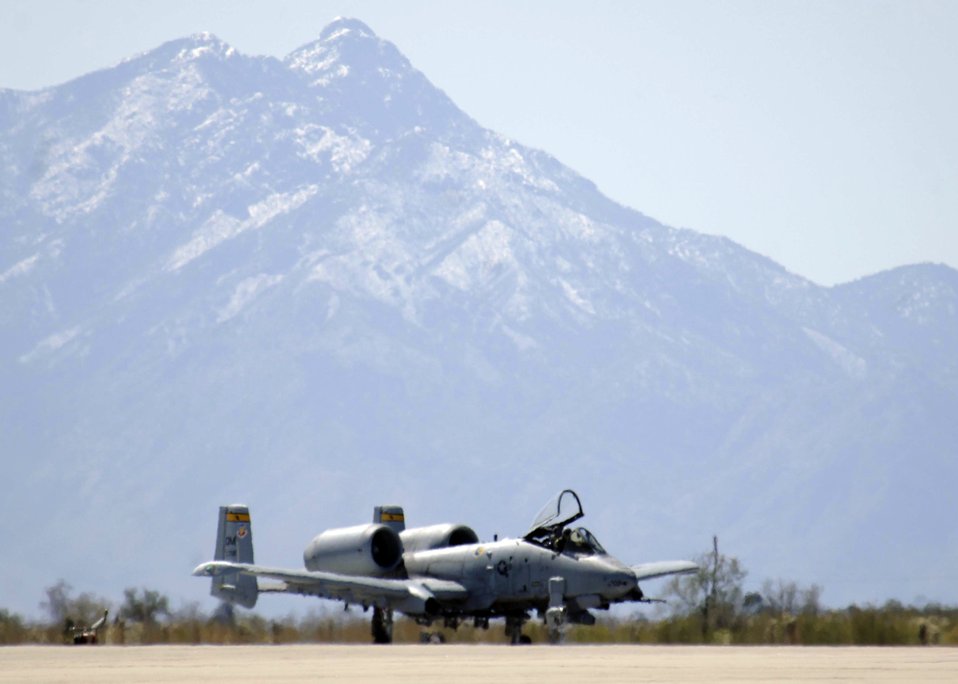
Hawgsmoke 2006

An A-10 Thunderbolt II taxis down the runway as it arrives at Davis-Monthan Air Force Base, Ariz., Wednesday, March 22, 2006, to kick off the beginning of